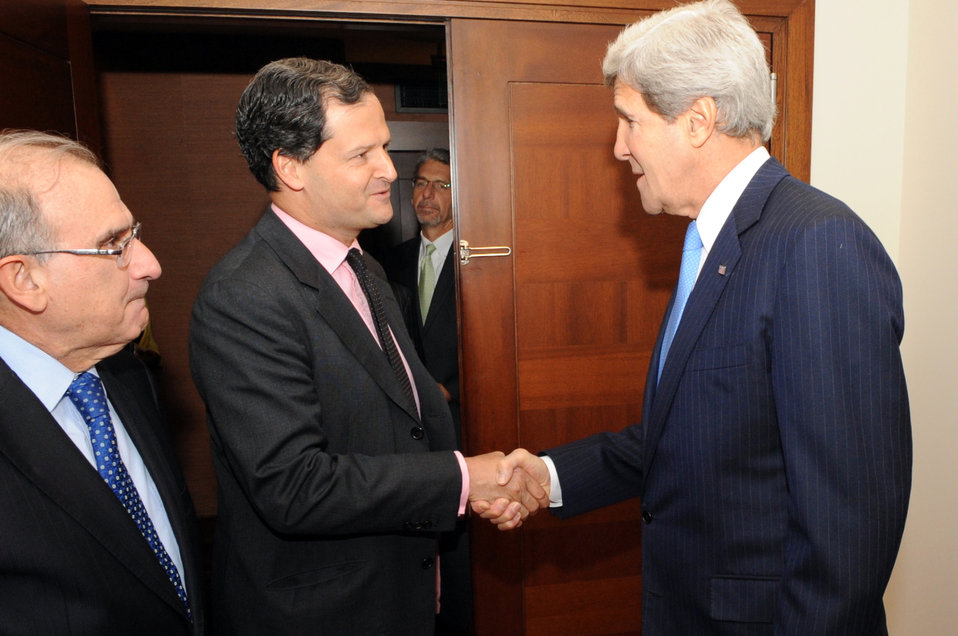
Secretary Kerry Shakes Hands With Colombian Peace Negotiator Sergio Jaramillo Caro

U.S. Secretary of State John Kerry shakes hands with Colombian peace negotiator Sergio Jaramillo Caro, who is accompanied by fellow negotiator Humberto De la Calle Lombana, before their breakfast meeting in Bogota, Colombia, on August 12, 2013.